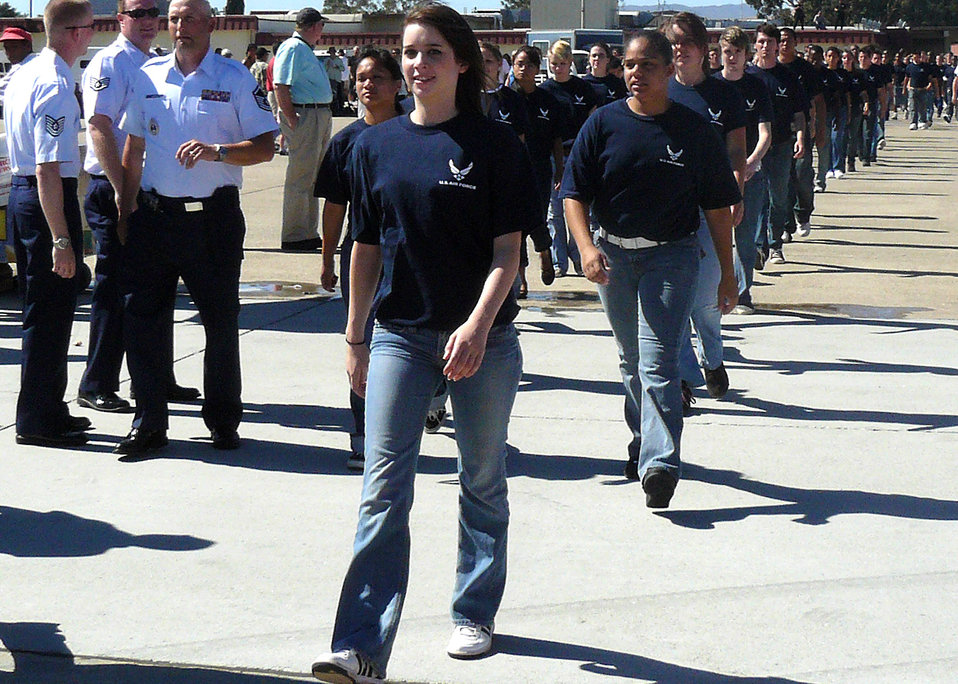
Recruiting swearing-in ceremony

Members of the 364th Recruiting Squadron Delayed Entry Program march out on the Travis Air Force Base, Calif., flightline Aug. 30 during Travis Air Expo 2008 to participate in the largest DEP swearing-in ceremony to date. Lt. Col. Greg Thomas, commander of the Air Force Thunderbirds, administered the oath of enlistment to 154 future Airmen before a crowd of more than 80,000 airshow spectators.